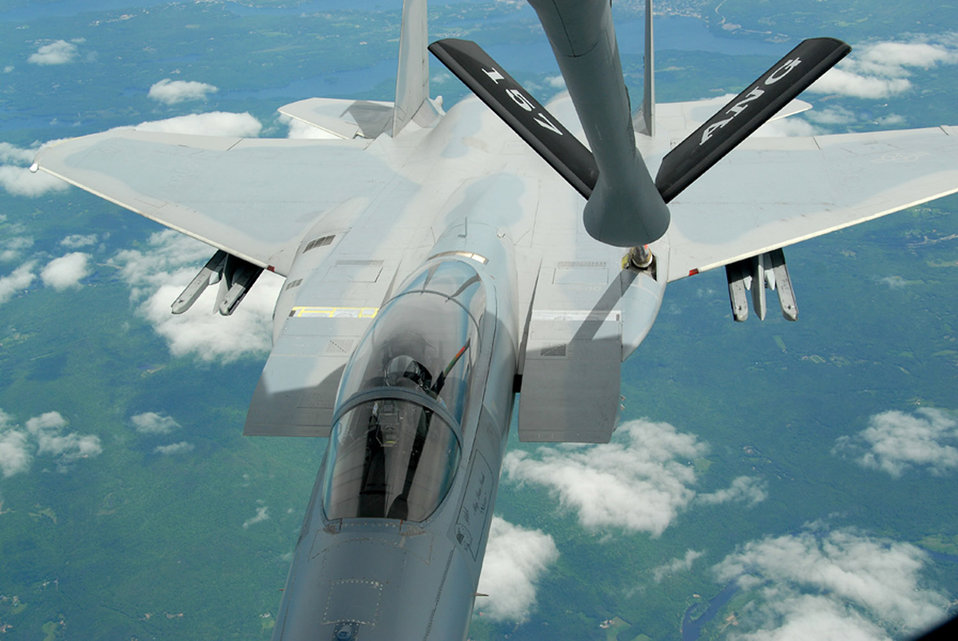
Air Force Week New England kicks off at Pease Air National Guard Base

An F-15 Eagle from Otis Air National Guard Base, Mass., refuels during a special event held June 6 to promote Air Force Week New England which will take place in August.